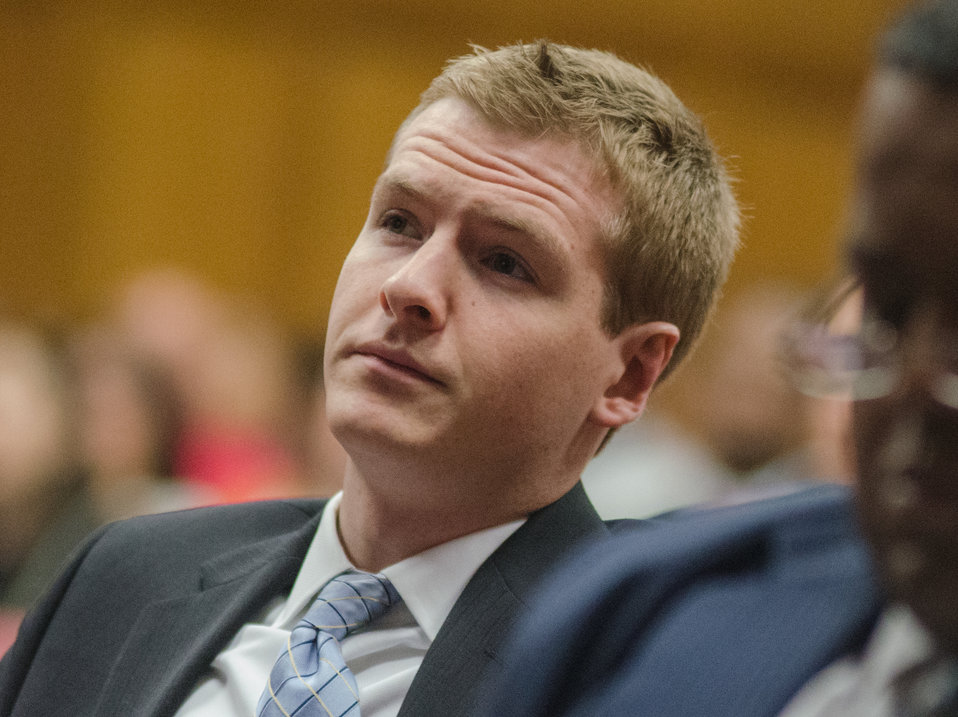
A U.S. Department of Agriculture (USDA) employee USDA Rural Development (RD) Deputy Under Secretary Patrice Kunech remarks during USDA’s Rural Development (RD) 2nd Annual Cultural Transformation kickoff opening ceremony and forums, themed “Employees Influencing Change,” on Tuesday, Aug. 13, 2013 USDA in Washington, D.C.